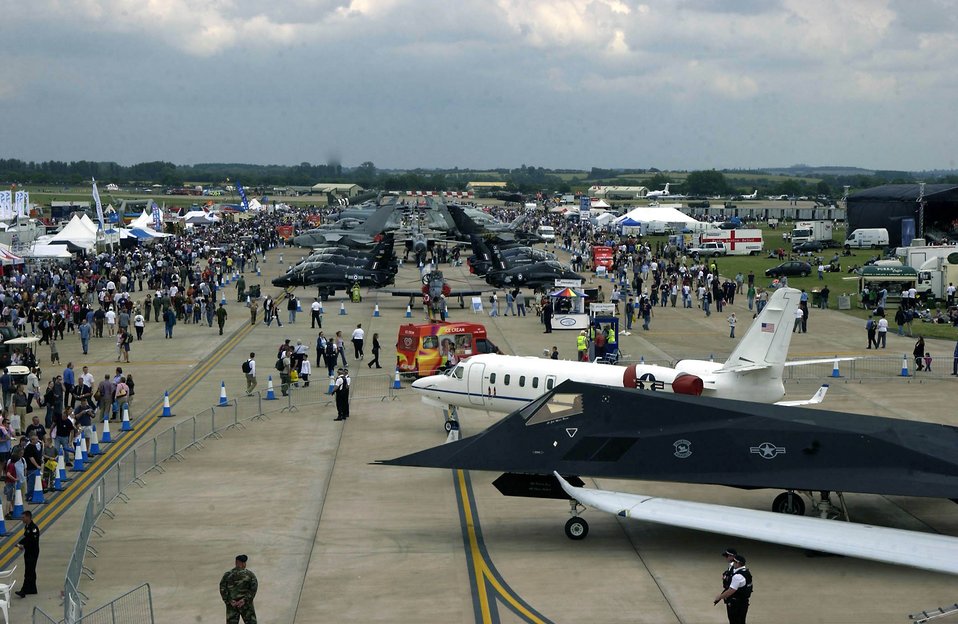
A revealing tattoo

ROYAL AIR FORCE FAIRFORD, England -- Crowds see various military aircraft during the Royal International Air Tattoo here July 16 to 18. More than 100,000 people visited the air show daily to see 350 aircraft from 15 nations and 30 different service branches.